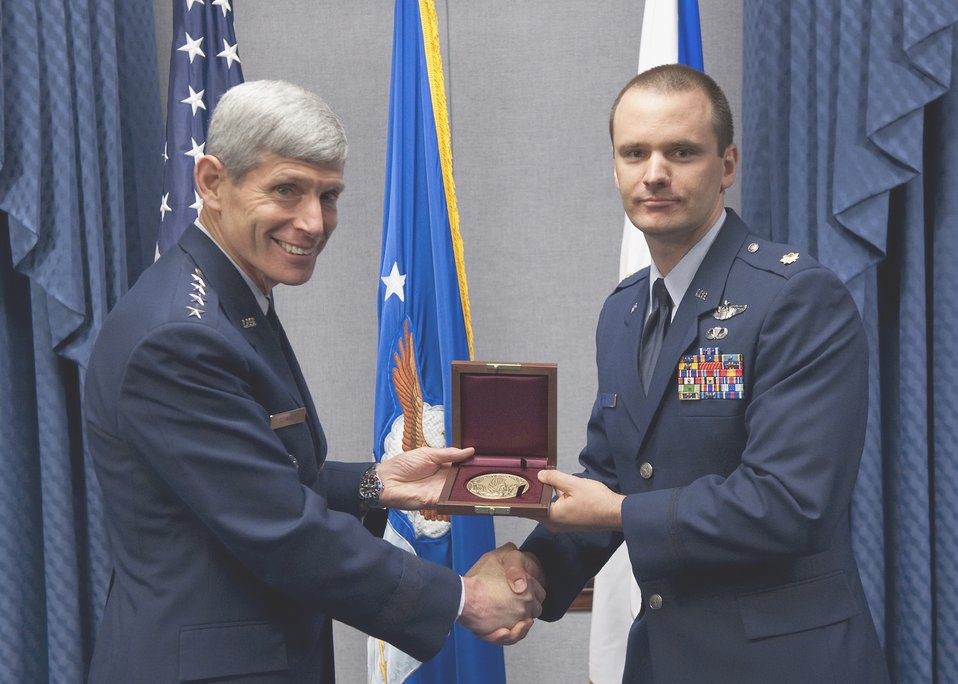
Helicopter pilot receives Cheney Award

Air Force Chief of Staff Gen. Norton Schwartz presents Maj. John G. Mangan with the Cheney Award Oct. 15, 2010, at the Pentagon. Major Mangan received the award for his actions as the pilot of an HH-60 Pave Hawk on a rescue mission in Helmland Valley, Afghanistan. Without ground communications or airborne support, Major Mangan managed to land and save the lives of two critically injured Marines under intense enemy fire. The Cheney Award is presented each year to aviators who demonstrate an act of valor, extreme fortitude or self-sacrifice in a humanitarian venture. Established in 1927, the award is in memory of 1st Lt. William Cheney, who was killed in an air collision over Italy in 1918. Major Mangan is currently assigned to Nellis Air Force Base, Nev.